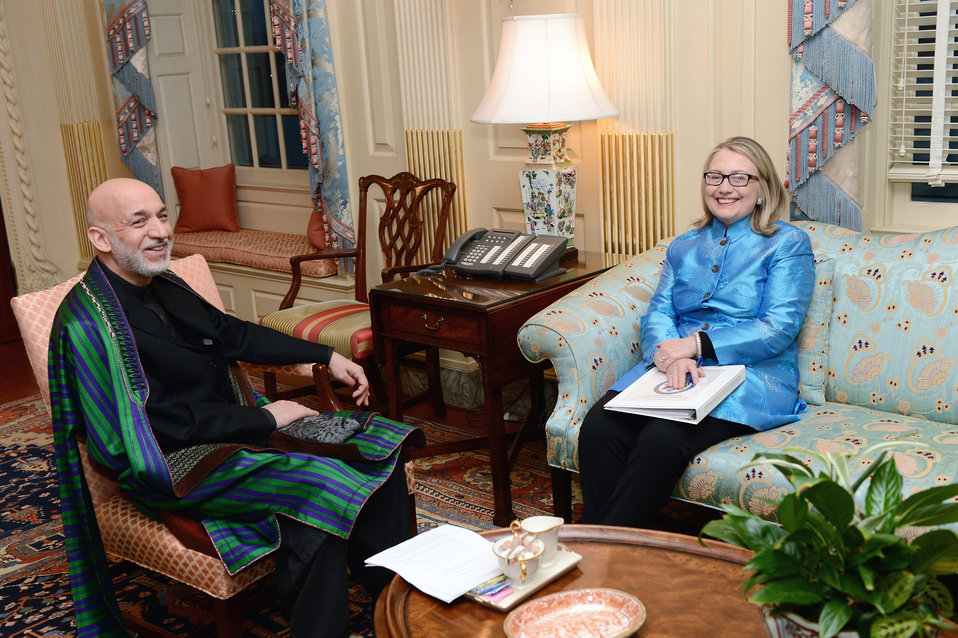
Secretary Clinton Meets With President Karzai

U.S. Secretary of State Hillary Rodham Clinton meets with Afghan President Hamid Karzai at the U.S. Department of State in Washington, D.C., January 10, 2013.